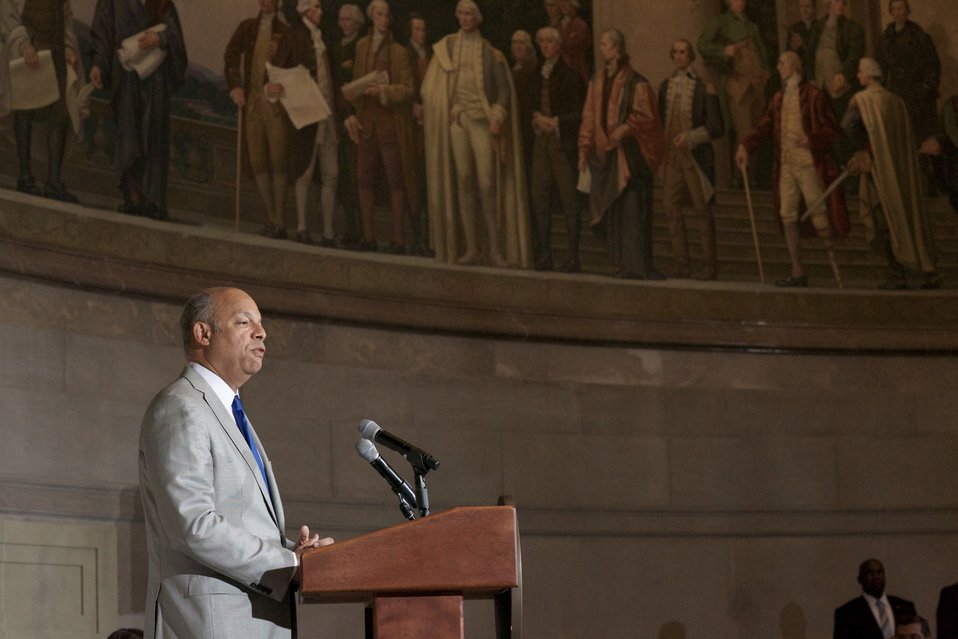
Naturalization Ceremony with Michelle Obama